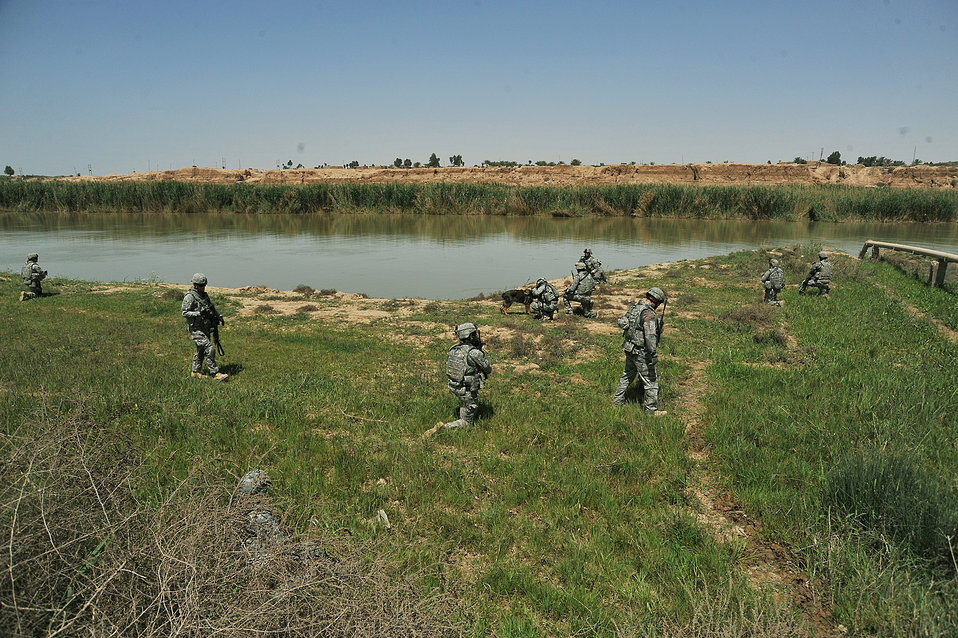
Airmen, Soldiers perform patrol

Air Force and Army members take a break along the Tigris river while conducting a dismounted patrol April 14, 2010, on the outskirts of Joint Base Balad, Iraq.